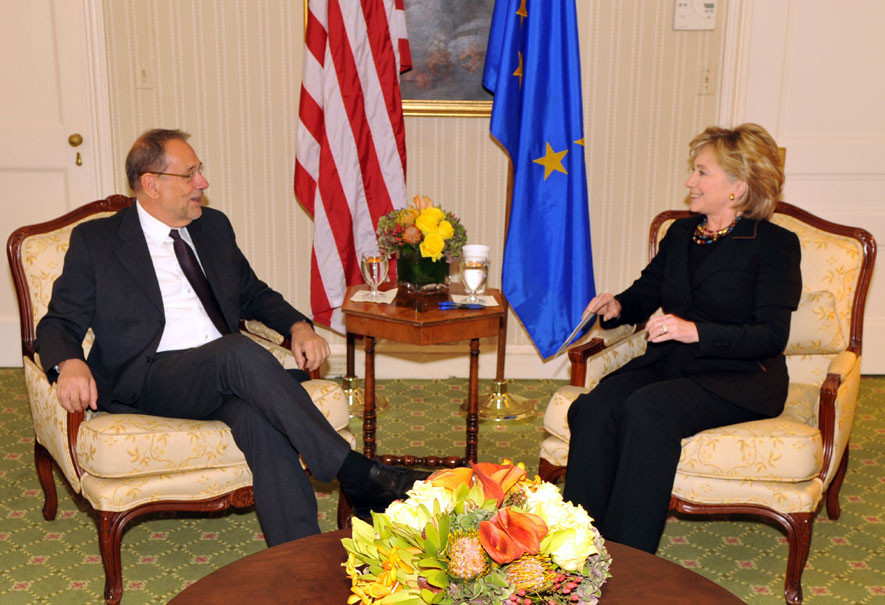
UNGA 2009: Secretary Clinton Meets With EU High Representative

U.S. Secretary of State Hillary Rodham Clinton meets with European Union High Representative Javier Solana at the Waldorf Astoria hotel during the 64th Session of the UN General Assembly in New York City, New York September 26, 2009.